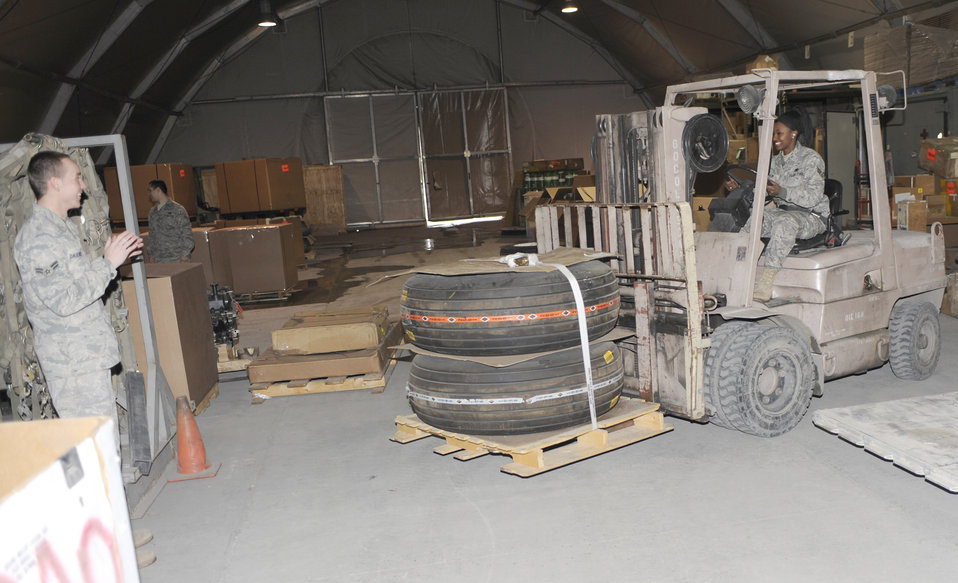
ELRS Airmen run a tight ship

TRANSIENT CENTER at MANAS, Kyrgyzstan -- Airman 1st Class Bradlee Daugherty, 376th Expeditionary Logistics Readiness Squadron outbound cargo and in-house carpenter, spots Senior Airman Linette Nosim, 376th ELRS cargo section NCOIC of operations in the warehouse here Feb. 23. Over the last year, the cargo movement section has moved over 23,000 items and over 8,500 short tons. This new rotation?s six-person section is expected to significantly move that and more through the additional northern distribution network-shipping lower priority freight by truck instead of air.